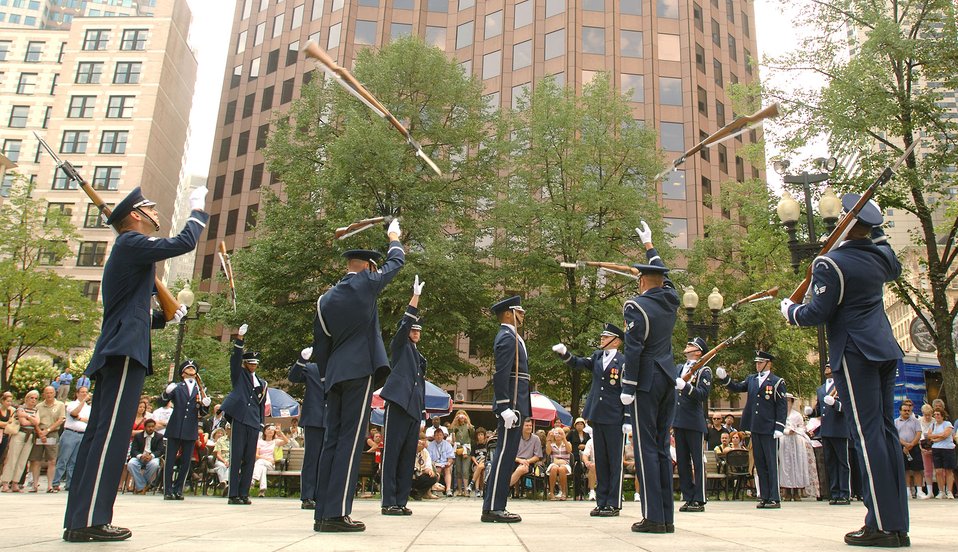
Boston proclamation party gets Air Force Week rolling

Members of the U.S. Air Force Honor Guard Drill Team perform their 16-man routine in proclamation ceremony for Air Force Week New England in front of historic Faneuil Hall in downtown Boston Aug. 17. The drill team is the traveling component of the Air Force Honor Guard and tours worldwide showcasing the precision of today's Air Force to recruit, retain and inspire Airmen.